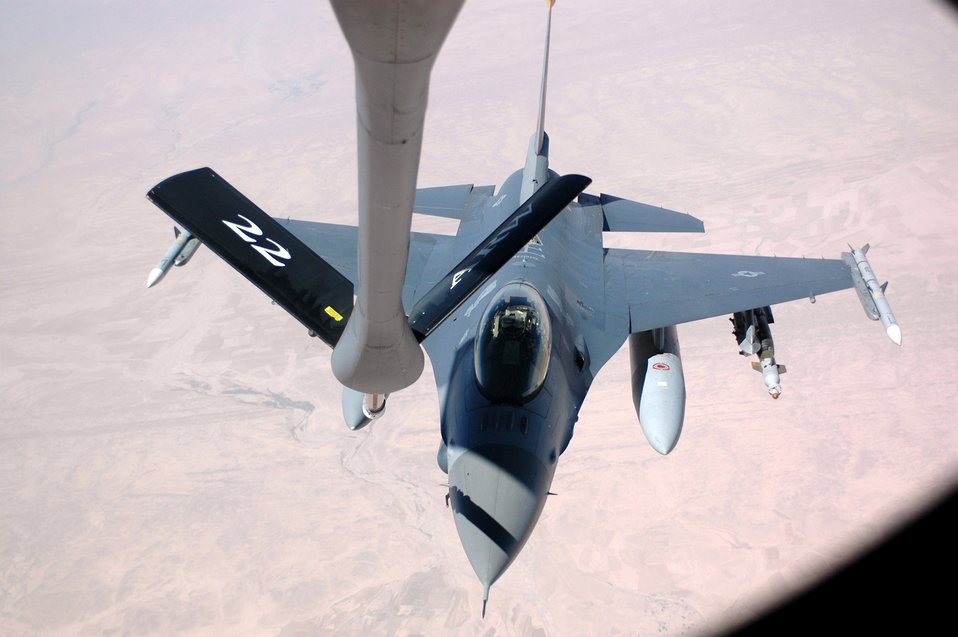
New tanker needed

An F-16 Fighting Falcon gets fuel from a KC-135 Stratotanker. The fighter was providing close air support for ground forces in Iraq. Air Force officials hope to replace the nearly 50-year-old KC-135 Stratotanker as soon as possible.